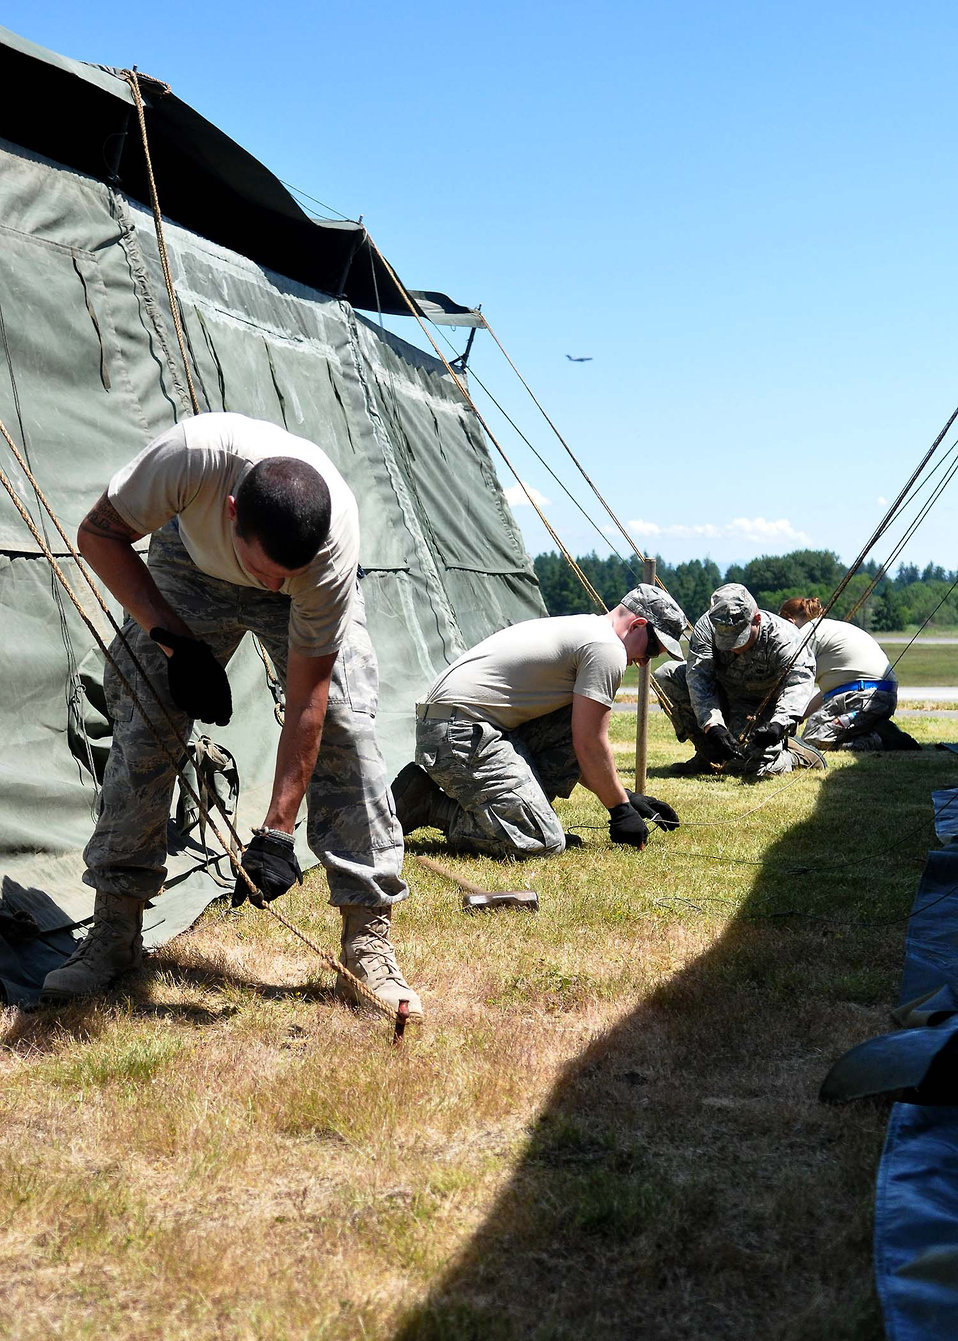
Air Mobility Command Rodeo

Airmen set up tents June 21, 2011, at Joint Base Lewis-McChord, Wash.